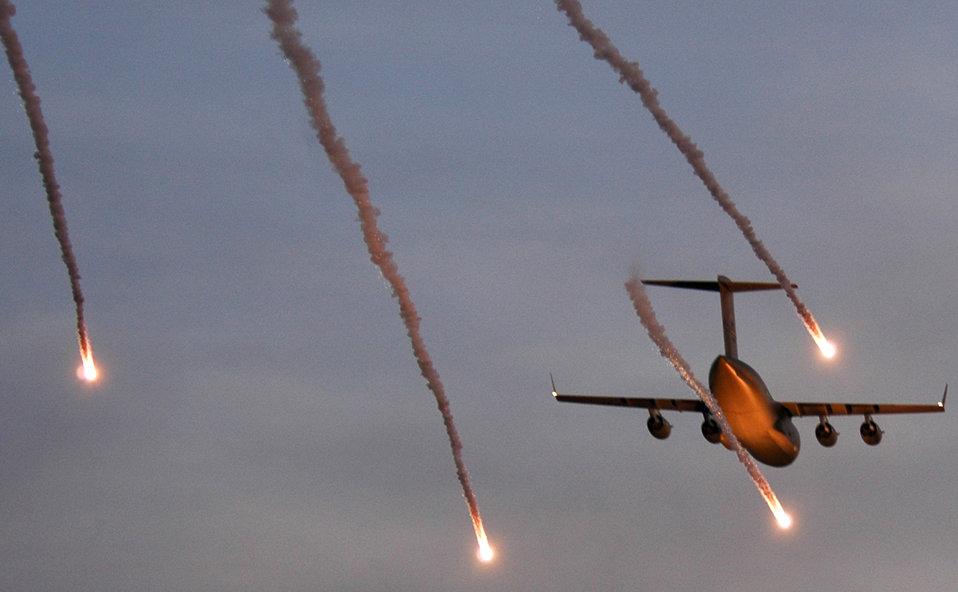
Warfare center creates mobility warriors

Contractors from Lord Aerospace work closely with aircraft maintenace at Willow Grove Air Reserve Station, Pa., in August 2004.